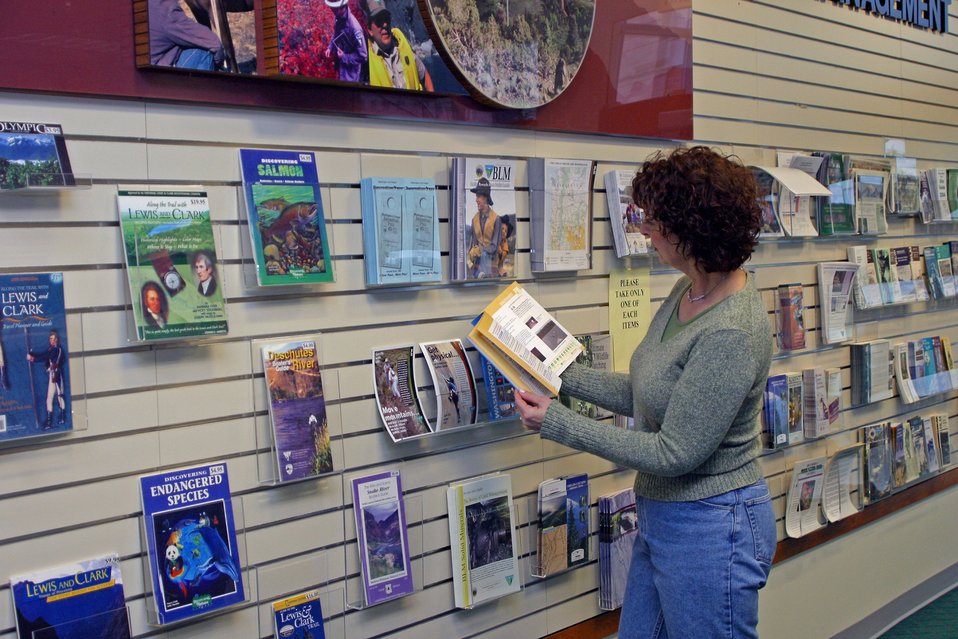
BLM's Land Office provides information about land status, minerals, maps, and general information to the public.